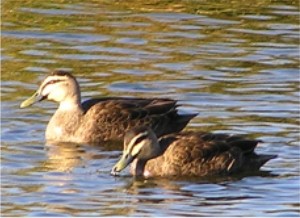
Pacific Black Duck, Homebush Bay (Sydney, Australia).